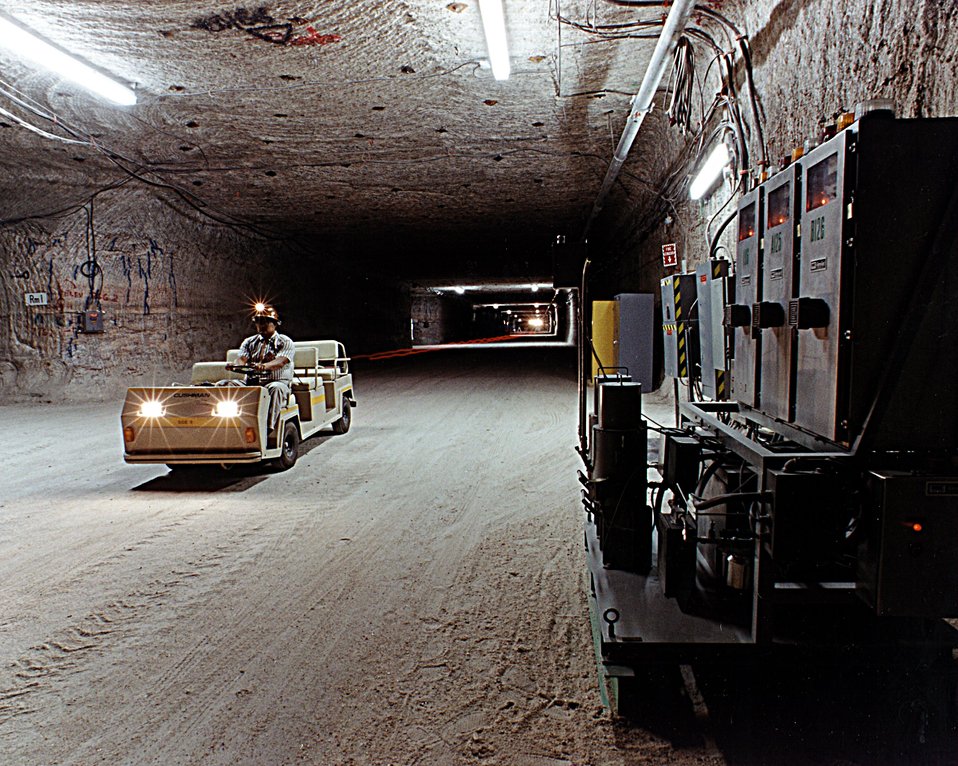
WIPP UNDERGROUND.

THE WASTE ISOLATION PILOT PLANT IS A DOE RESEARCH AND DEVELOPMENT FACILITY FOR DEMONSTRATING THE SAFE DISPOSAL OF TRANSURANIC RADIOACTIVE WASTES. TEST SHAFTS HAVE BEEN DRILLED TO A DEPTH OF 2,100 FEET. THE SHAFTS, ONE 6 FEET IN DIAMETER AND THE OTHER 12 FEET IN DIAMETER, PROVIDE AN ENTRY PASSAGE AND VENTILATION TO THE UNDERGROUND SALT ROCK FORMATION THAT IS BEING TESTED TO DETERMINE ITS SUITABILITY FOR RADIOACTIVE WASTE STORAGE.